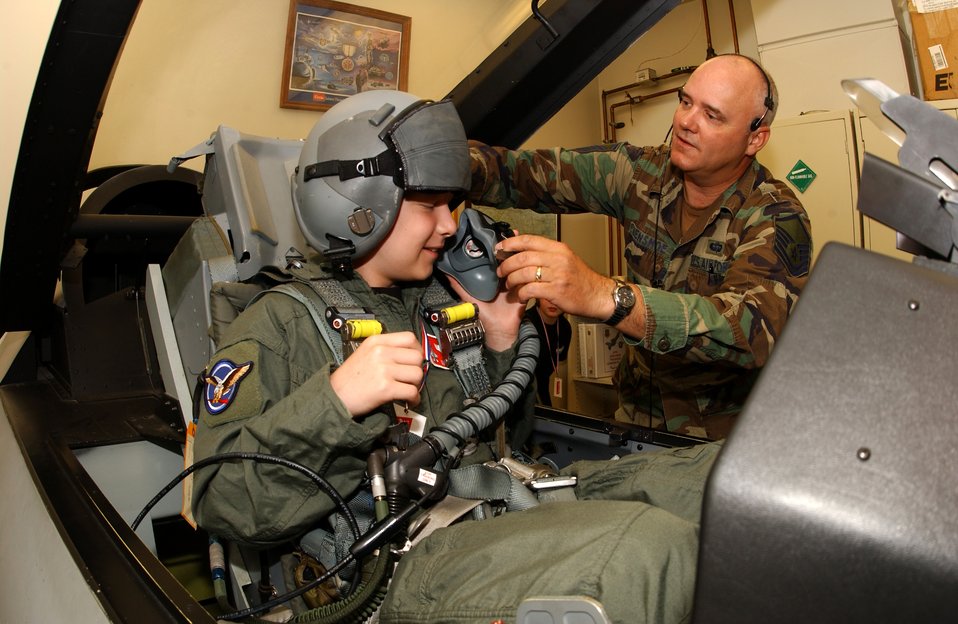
Pilot for a day

Master Sgt. Tracey Kensmoe helps